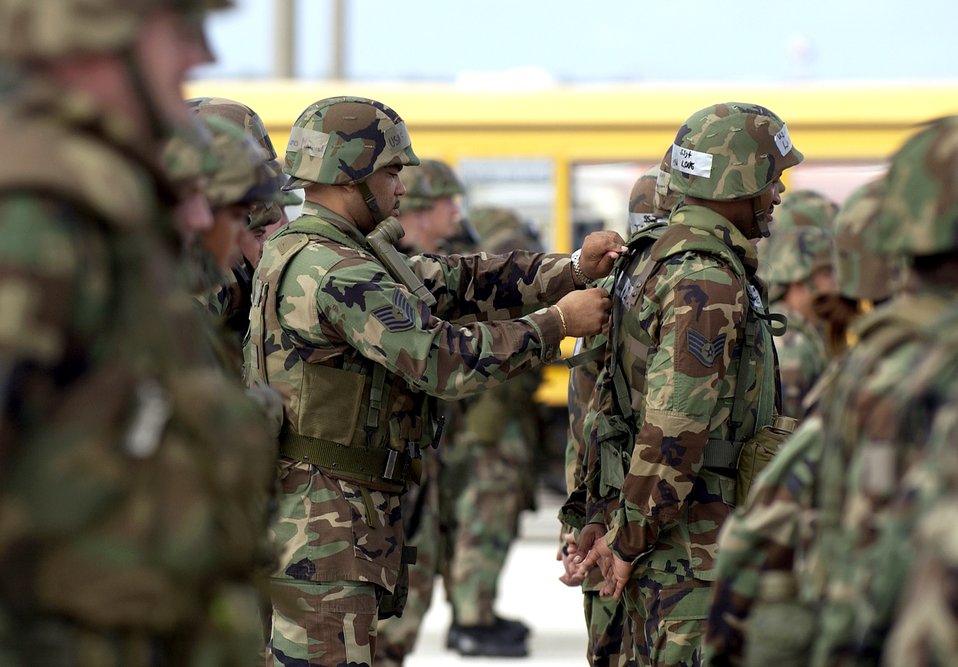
Deployment check

ANDERSEN AIR FORCE BASE, Guam (AFPN) -- Tech. Sgt. James Manuel adjusts Staff Sgt. Lavaughn Love's gear before an open ranks inspection. The 36th Civil Engineering Squadron here holds regular inspections to ensure troops have all of their necessary equipment for deployment.